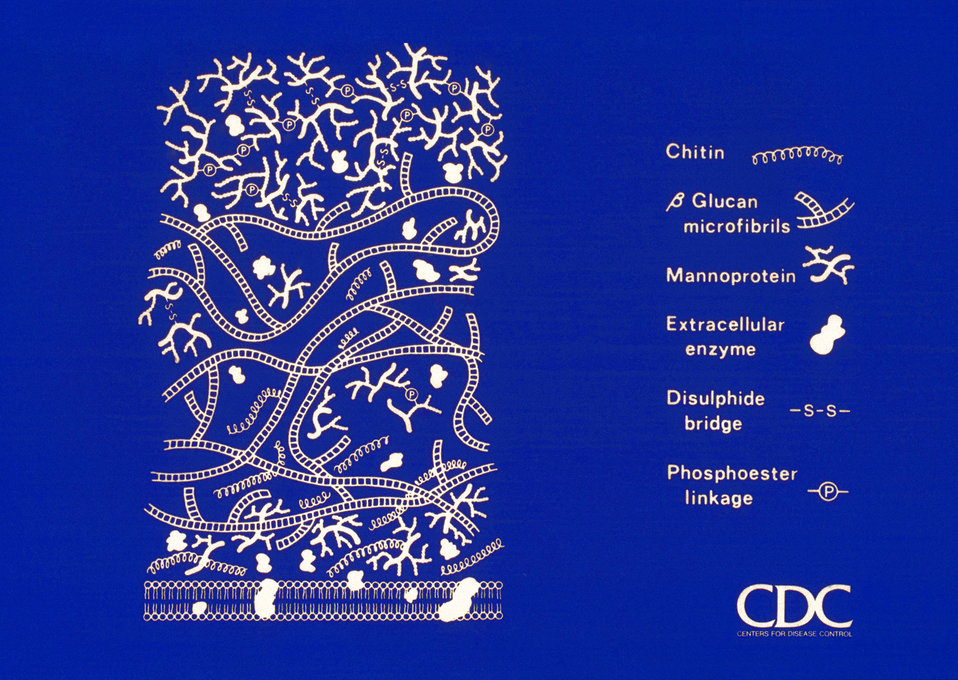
This illustration depicts the molecular architecture of the cell wall of a Candida albicans fungal organism.